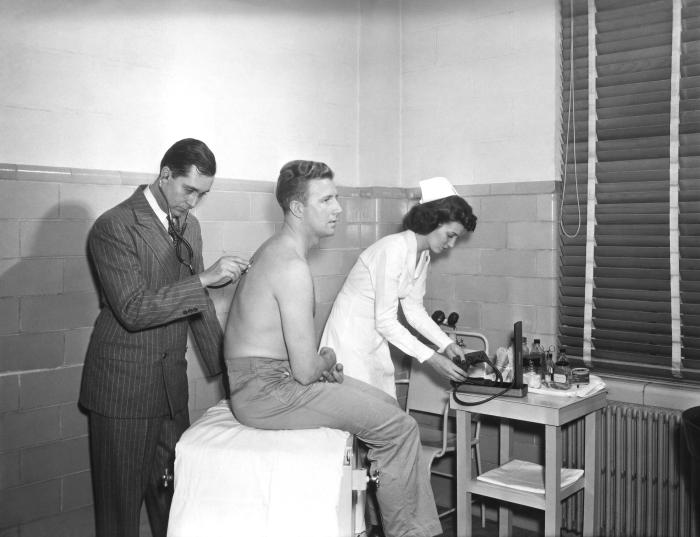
Physician and patient

This 1950s historical photograph was provided by the Center for Disease Control's (CDC), National Institute for Occupational Safety and Health (NIOSH). It depicted an industrial plant physician and nurse, as they were examining a plant worker. The doctor was using a stethoscope in order to 'auscultate' chest sounds emanating from the worker's chest cavity. The nurse was preparing to take the worker's blood pressure reading using a device known as a 'sphygmomanometer'.